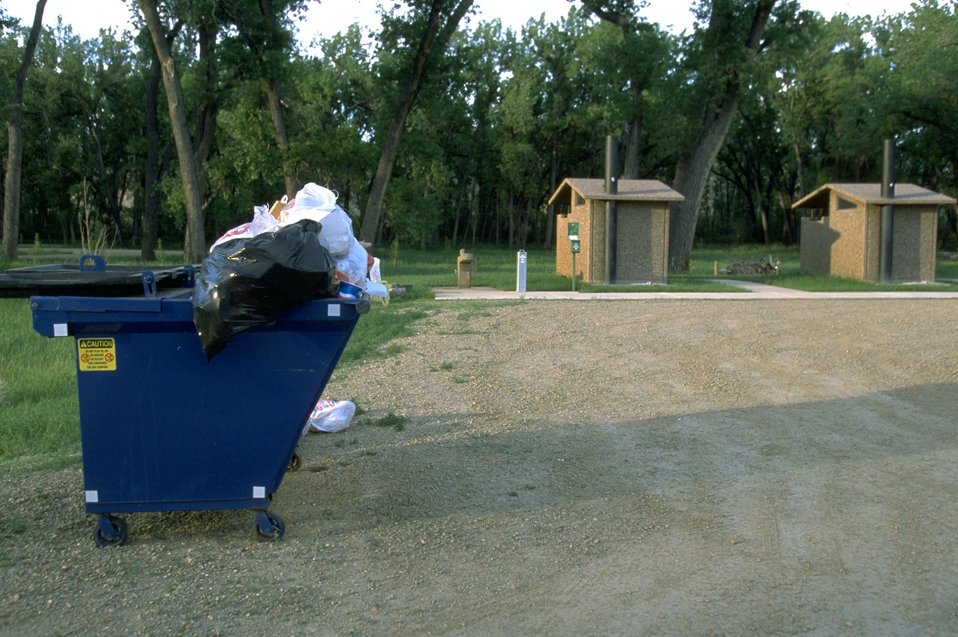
Trash dumpster and outhouses at the Visitor Center at Kipp Recreation Center